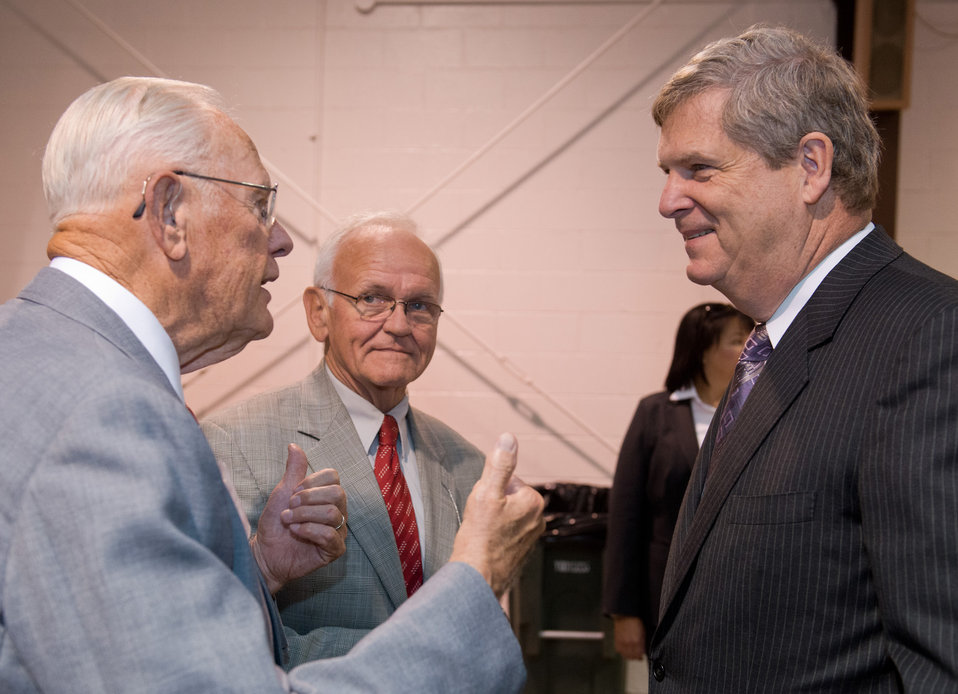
Mr. Bob Scherer (left), U.S. Department of Agriculture’s (USDA) Ohio Farm Service Agency (FSA) State Director Steve Maurer (middle) and Agriculture Secretary Tom Vilsack (right) provide a good laugh to the Secretary at the Ohio State Fair in Columbus on Friday, August 3, 2012.